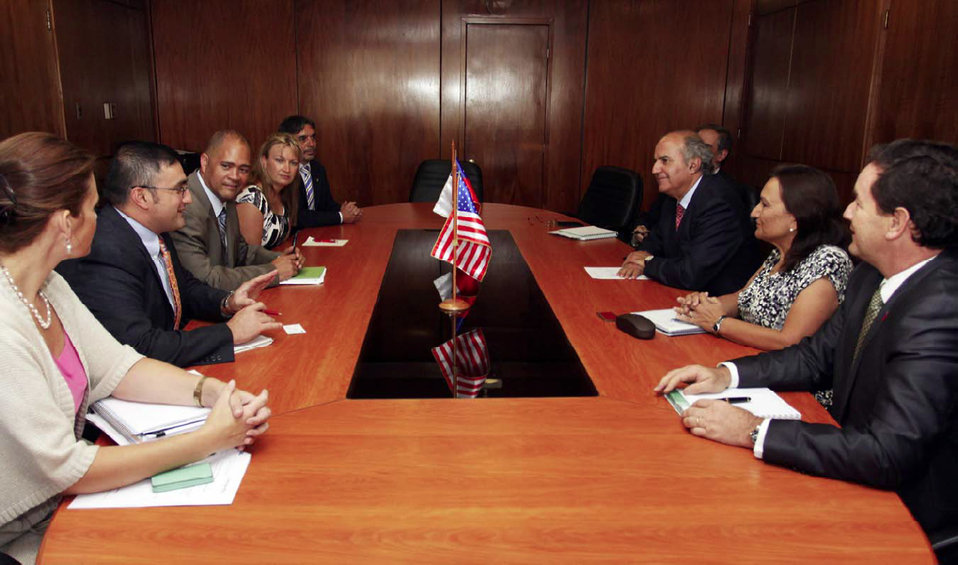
FDA Forges Partnerships in Latin America

Staff members in FDA's Latin America Office meet often with their regulatory counterparts in Latin America. Here, Michael Rogers (middle left side) and Edmundo Garcia (second, left side) meet with Chile's Minister of Agriculture Luis Mayol Bouchon (middle, right side) and his colleagues to discuss regulatory and public health issues that affect both nations. Of all the products regulated by FDA — including food, drugs, medical devices and others — about 30 percent come from Latin America. To learn how FDA's Latin America Office ensures these products are safe and effective for U.S. consumers, read this FDA Consumer Update, available in both English and Spanish:

• FDA Forges Partnerships in Latin America

• La FDA forja asociaciones en América Latina